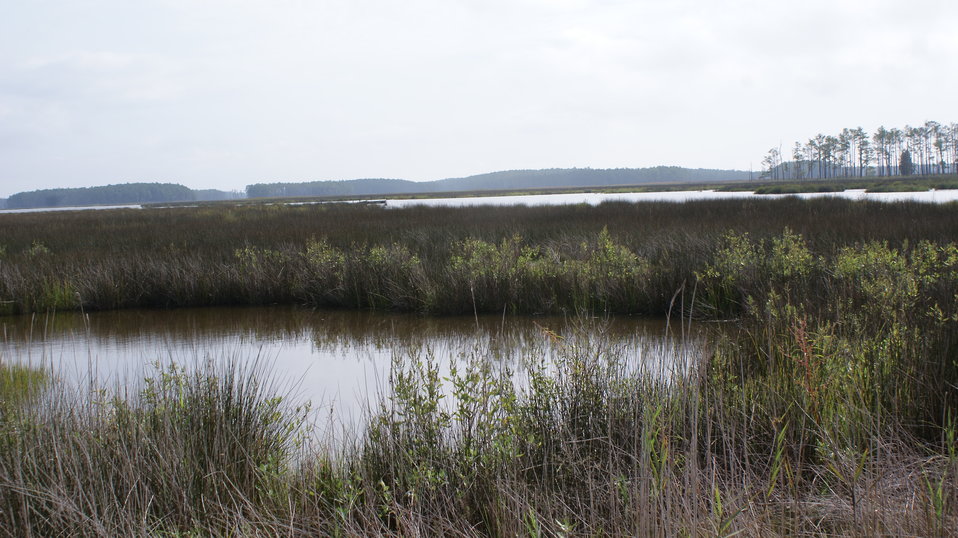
Spicers Creek with Blackwater National Wildlife Refuge and Taylors Island Wildlife Management Area in the background.